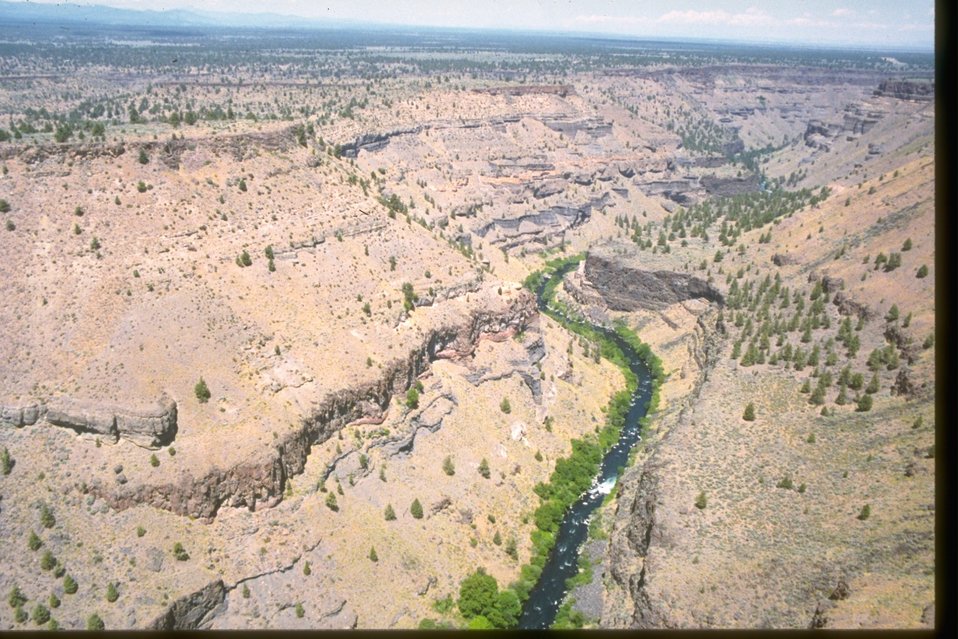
Aerial view of the Steelhead Falls Wilderness Study Area. OR 5-14